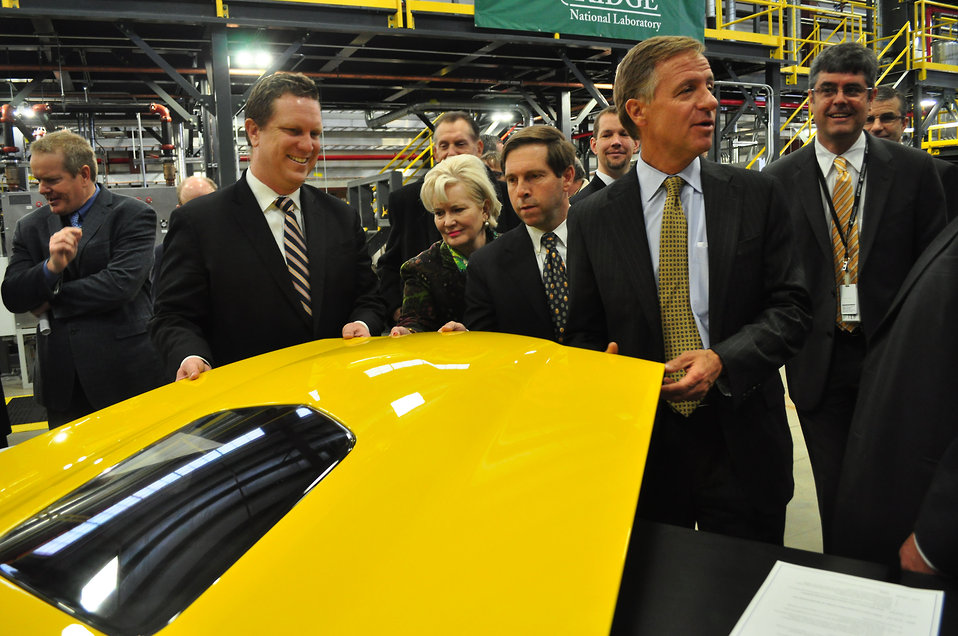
Carbon Fiber Technology Facilty Open House Oak Ridge Tennessee

13-025 DOE photo Lynn Freeny